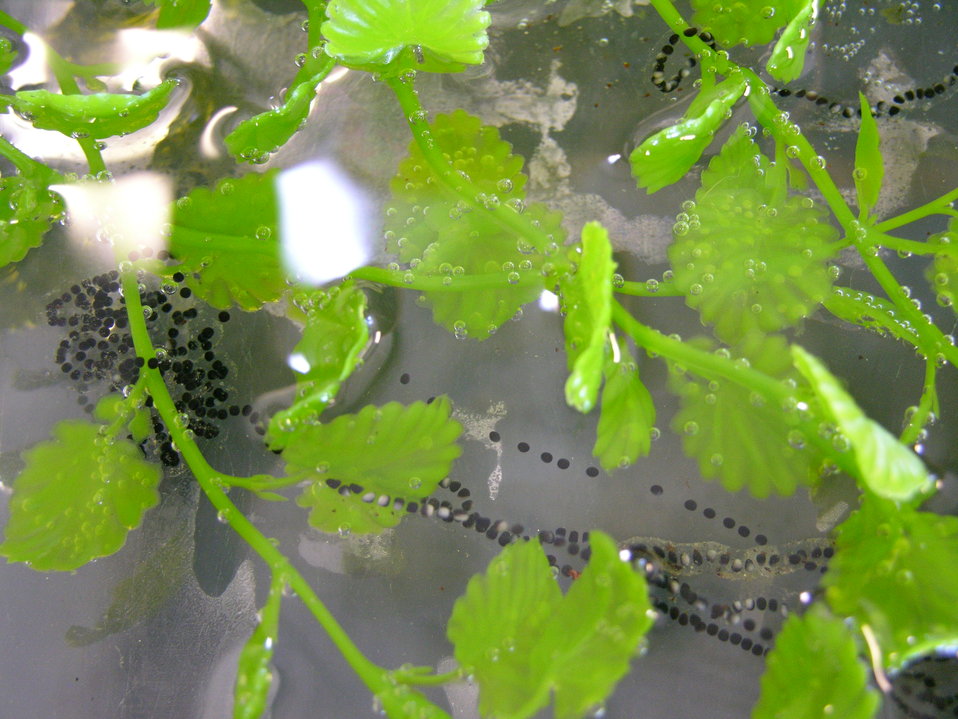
Wyoming Tadpoles

In 1987 the toads where considered extinct until a fisherman discovered them on Mortenson Lake. From that moment on The U.S. Fish and Wildlife and its numerous partners have been working on revitalizing the population of the Wyoming Toad.